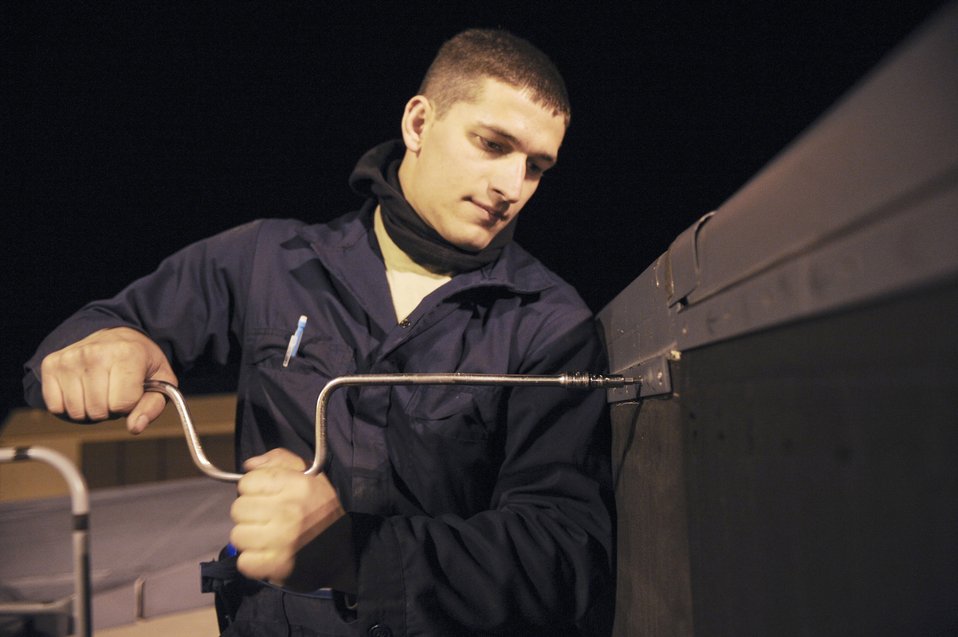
Inspection of a B-1B Lancer

Airman 1st Class Zach Ferris installs a fairing seal on a B-1B Lancer at Ellsworth Air Force Base, S.D., March 31, 2010. Airman Ferris is a crew chief with the 28th Aircraft Maintenance Squadron.